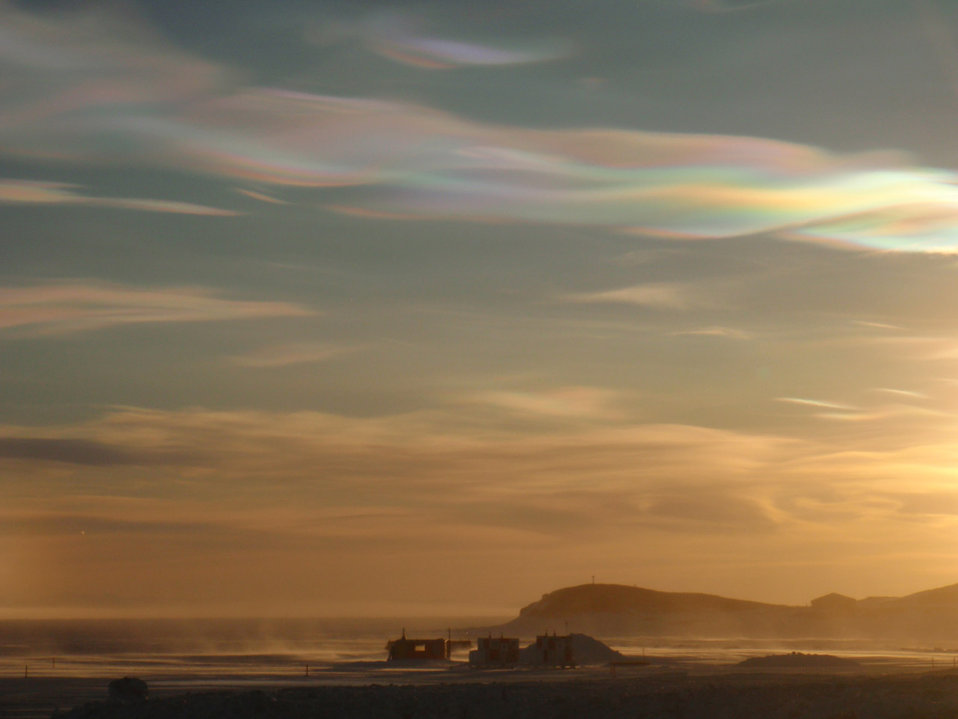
Nacreous clouds at hut point

Nacreous clouds, which only appear in high latitudes at the end of winter, over discovery hut at hut point, mcmurdo station, antarctica.